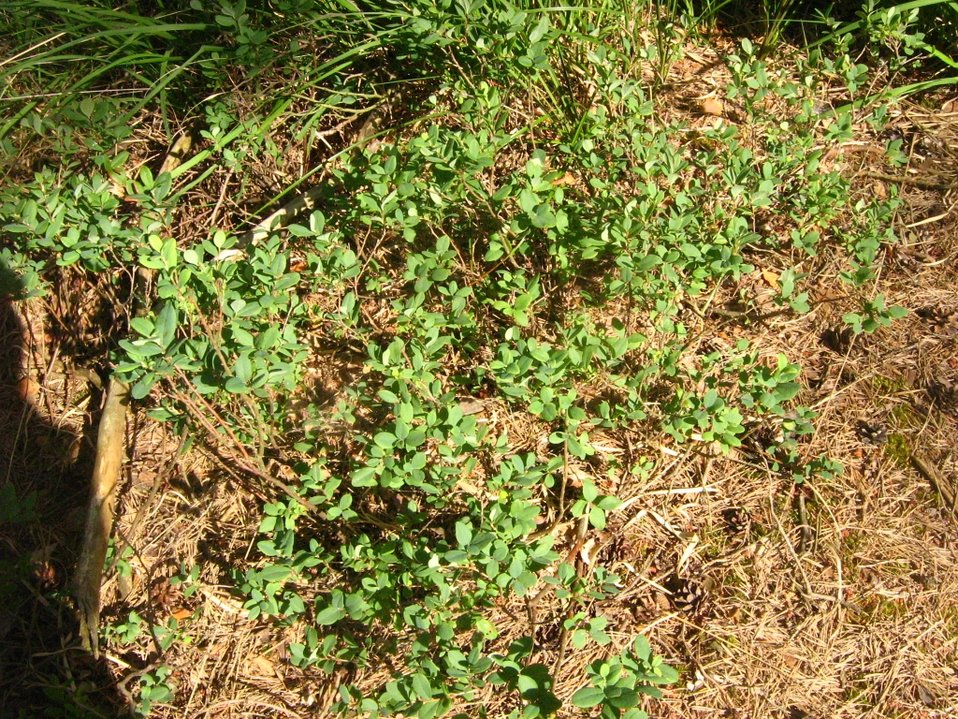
Deutsch: Das Dänschenburger Moor ist eines der größten Hochmoore Norddeutschlands. Durch Wasserabsenkung ist das Moor inzwischen fast vollständig mit Kiefern und Birken bewaldet.
(NSG „Großes Moor bei Dänschenburg“ N21, 71 ha, Gemeindegebiet der Stadt Marlow, Landkreis Nordvorpommern, Mecklenburg) Camera location 54° 07′ 46.12″ N, 12° 26′ 27.49″ E View this and other nearby images on: OpenStreetMap - Google Maps - Google Earth 54.129478; 12.440969